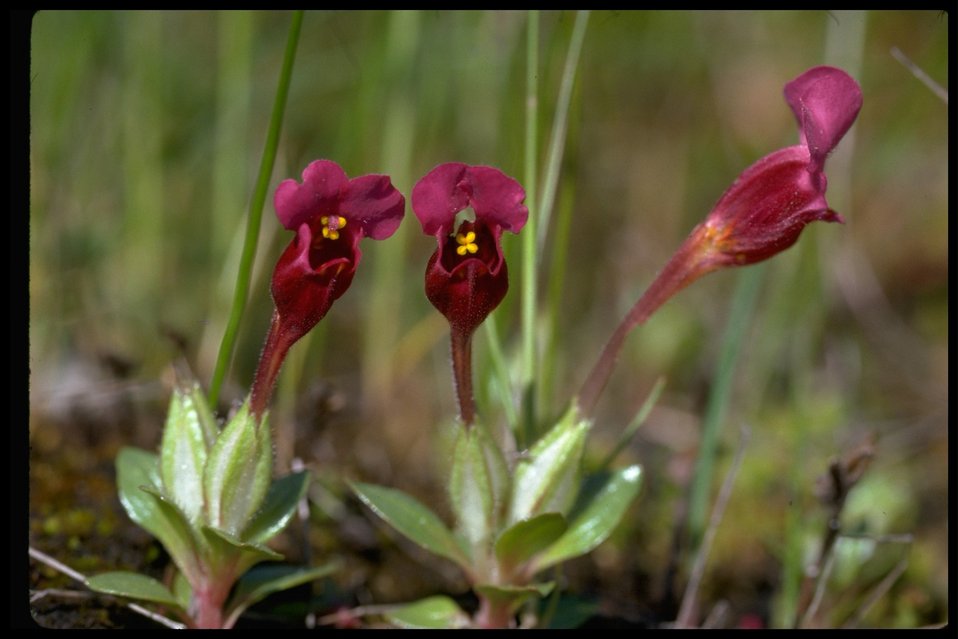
Medium shot of Douglas' monkey flower (Mimulus douglasii).